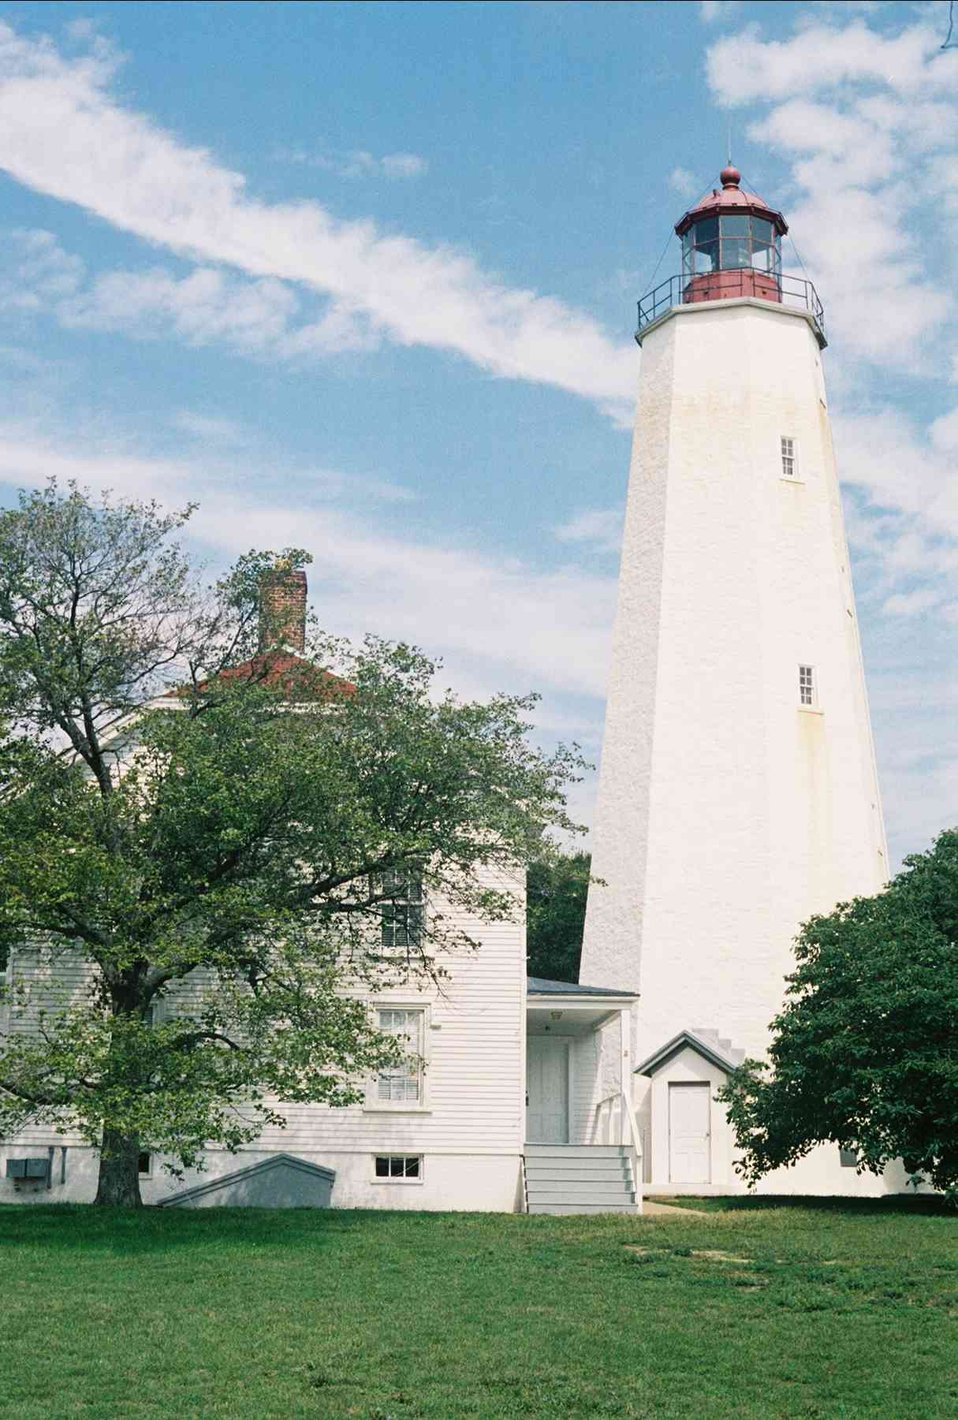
Sandy Hook Lighthouse.